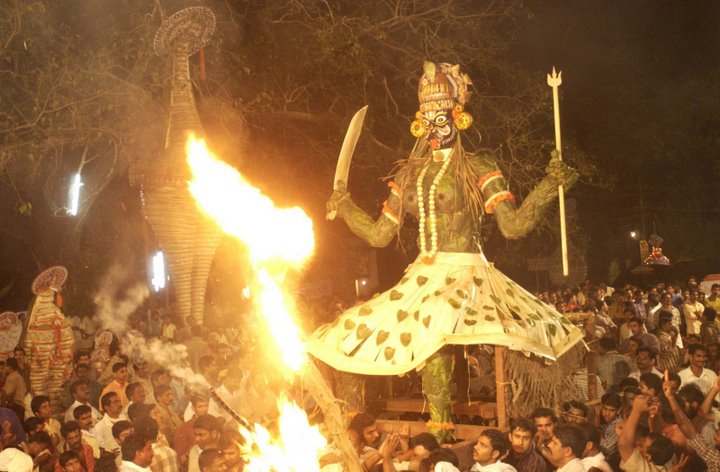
മലയാളം: Yakshi kolam